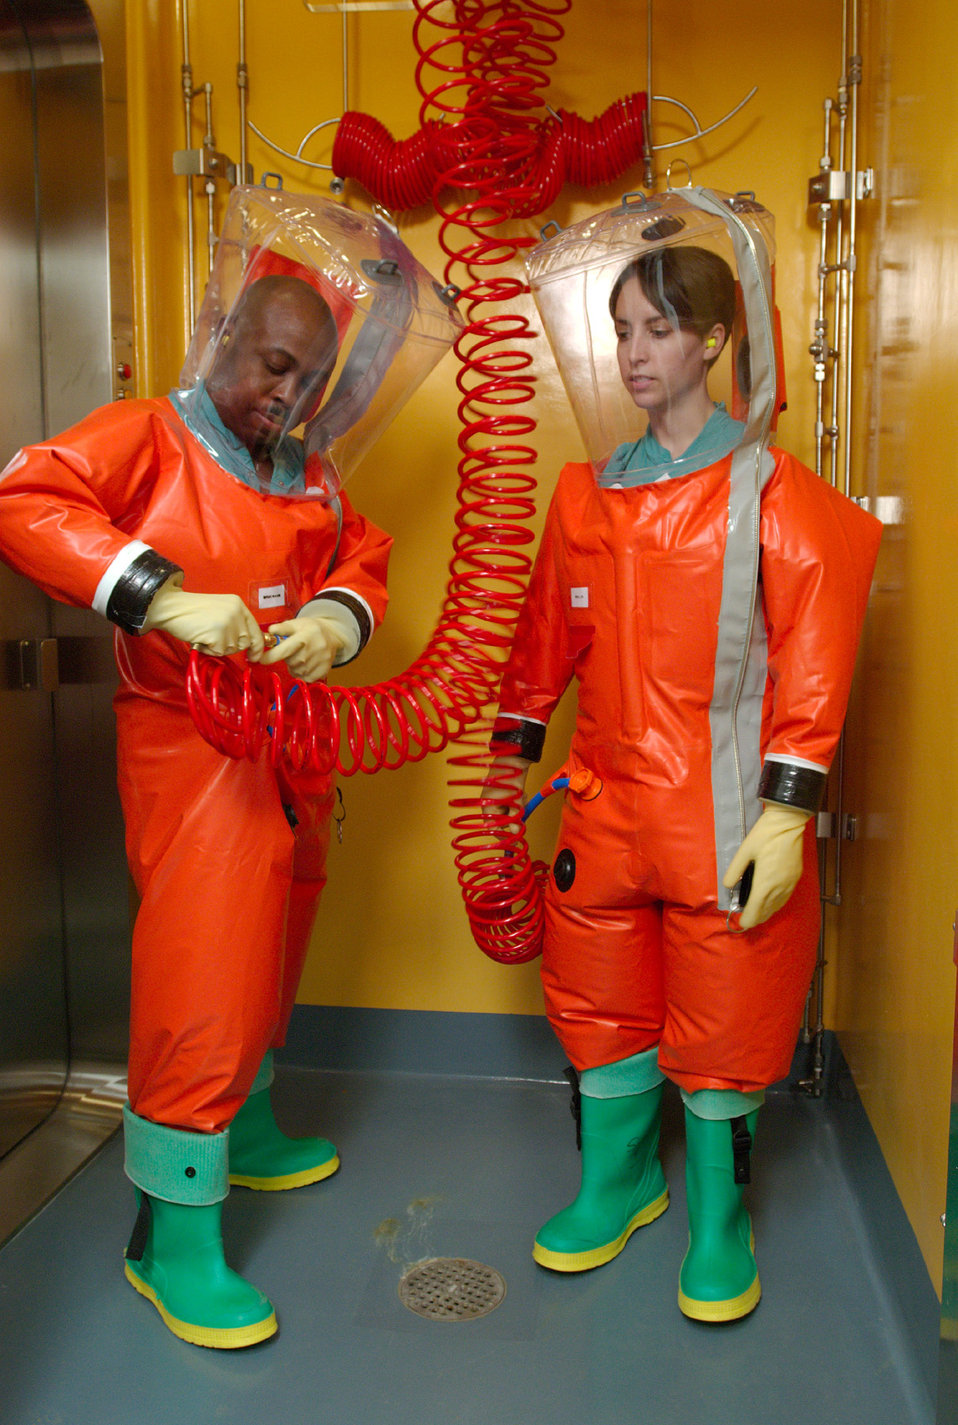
This 2007 image depicted Centers for Disease Control microbiologists as they were in the process of suiting up in order to access the interior of the organization's Biosafety Level-4 (BSL-4) laboratory. The scientist on the left was attaching his supportive air hose, which would provide a supply of filtered, breathable air, as well as maintain positive air pressure inside his air tight orange suit.